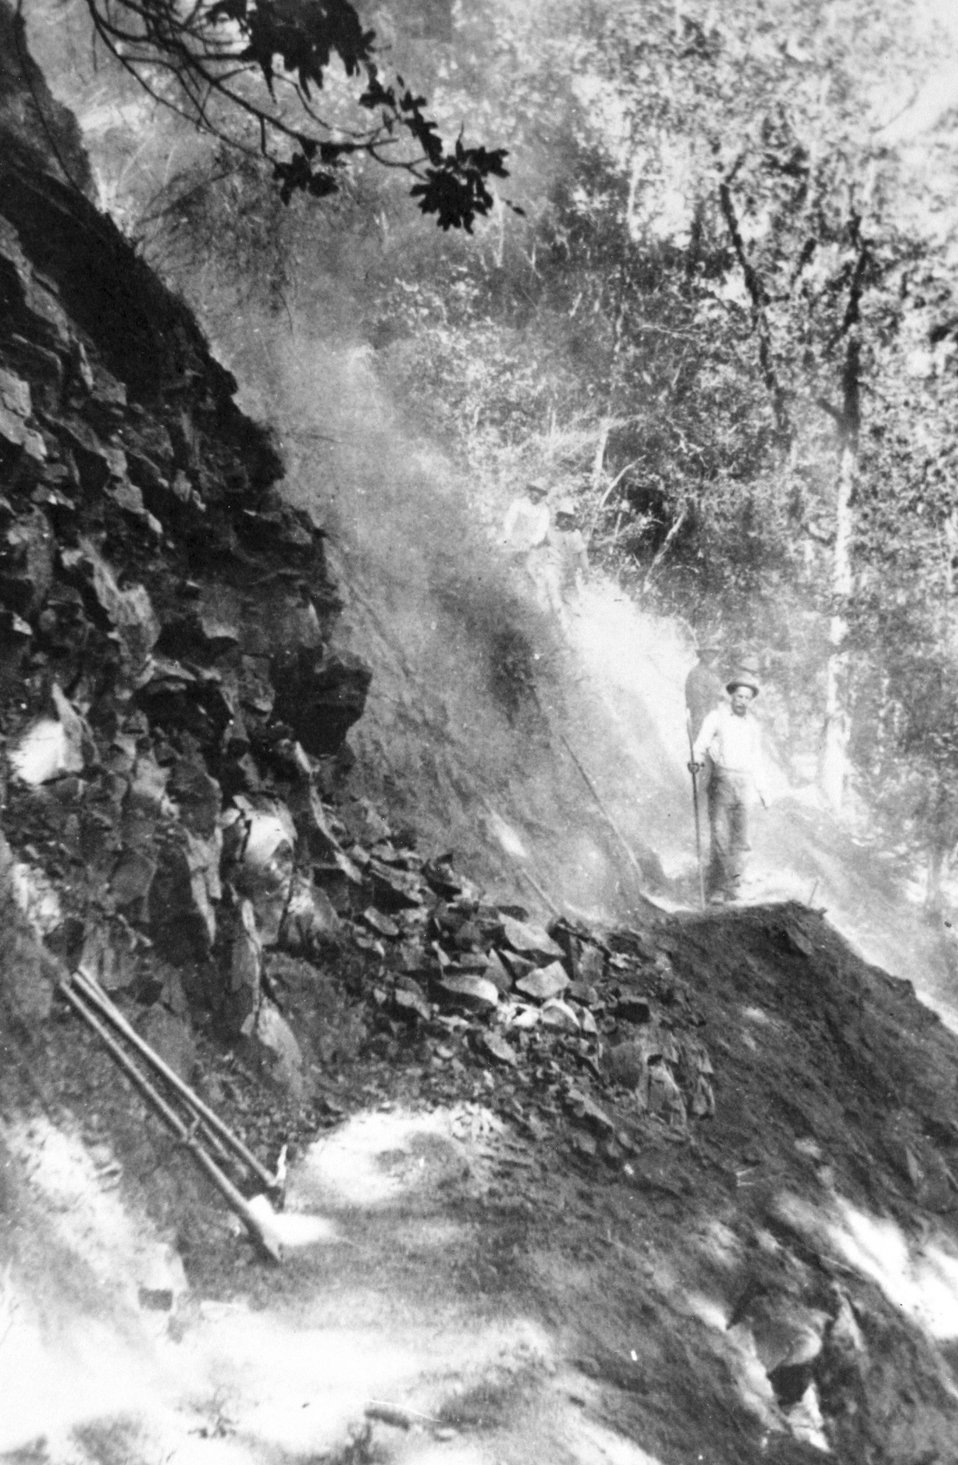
Building a U.S. Forest Service Trail C. 1910